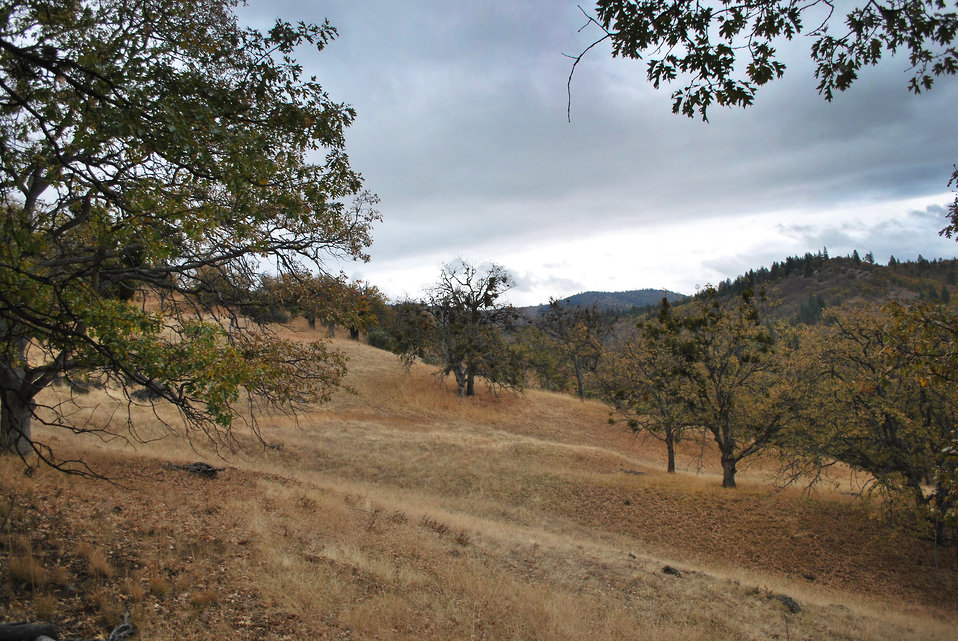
Colestin Valley Oak Restoration Project